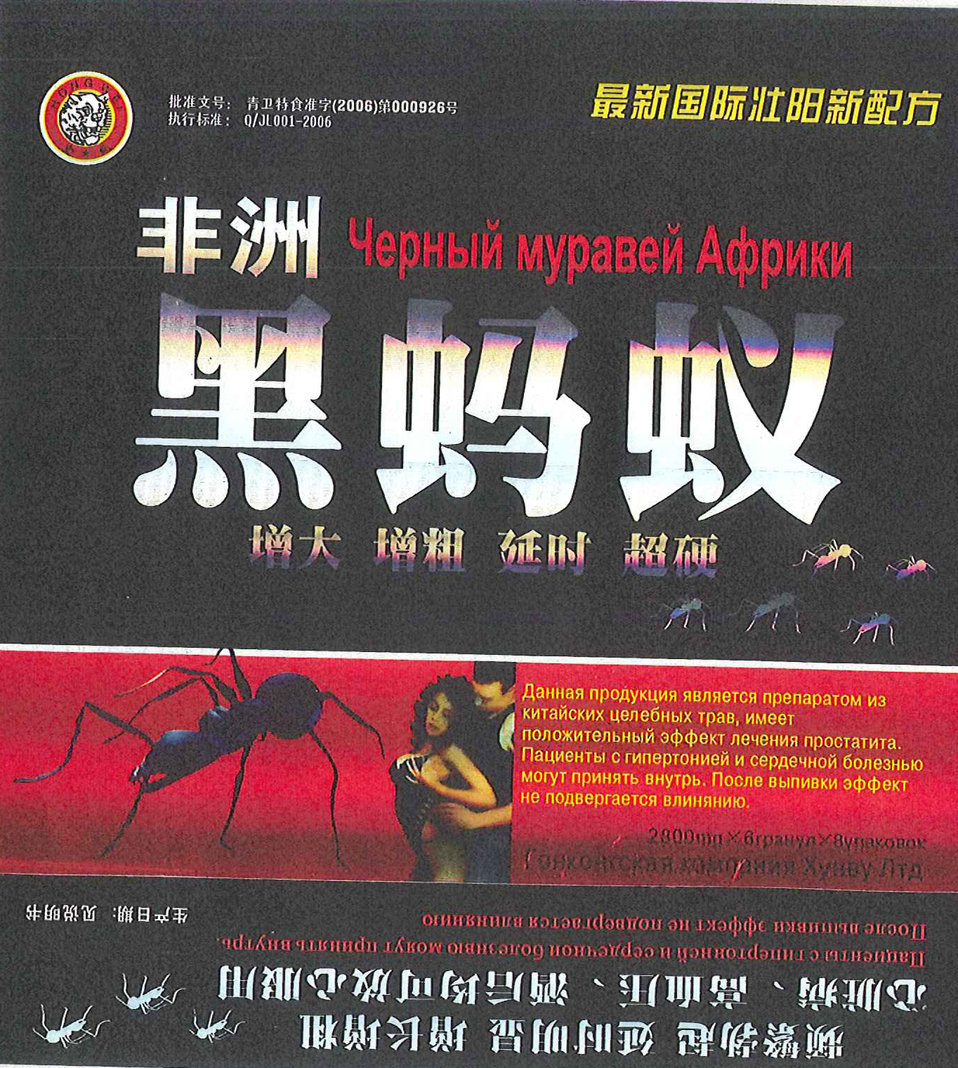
Black Ant